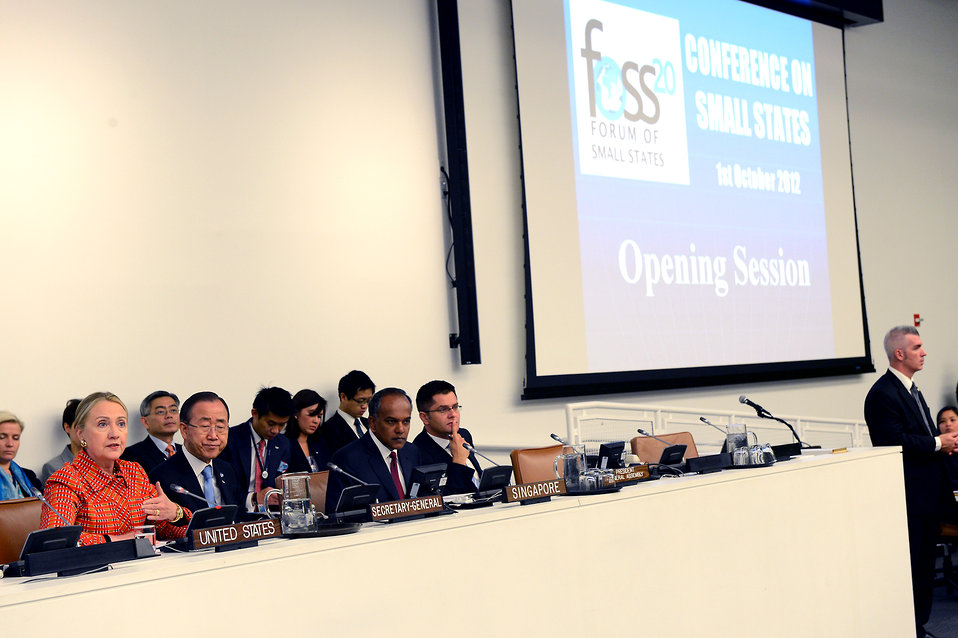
Secretary Clinton Delivers Remarks at the Forum on Small States Opening Session

U.S. Secretary of State Hillary Rodham Clinton delivers remarks at the Forum on Small States Opening Session at the United Nations in New York, New York on October 1, 2012.